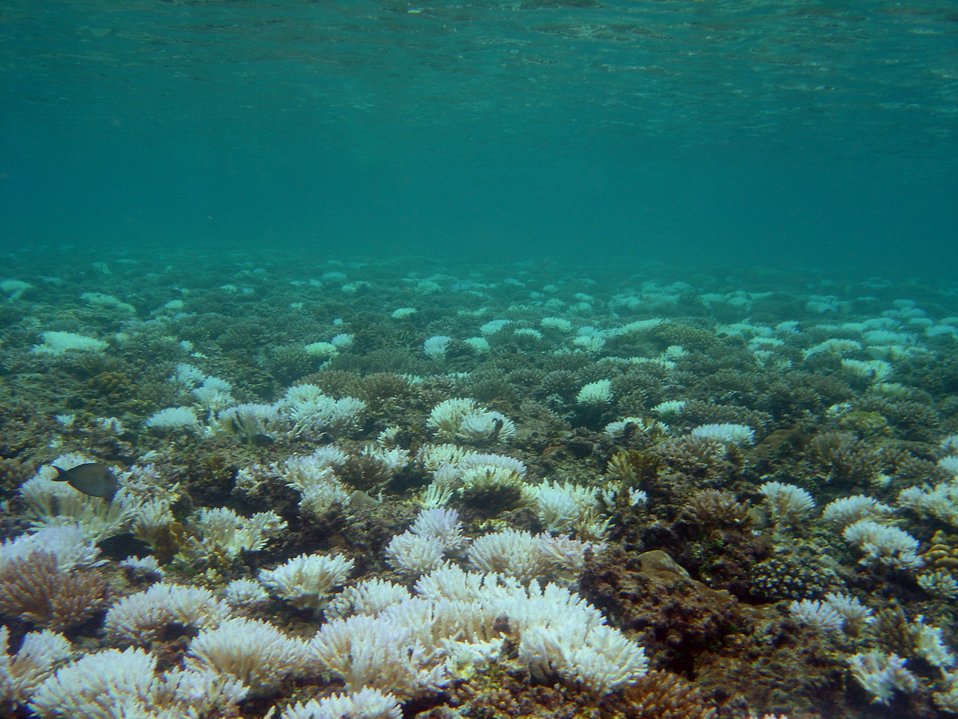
Coral bleaching